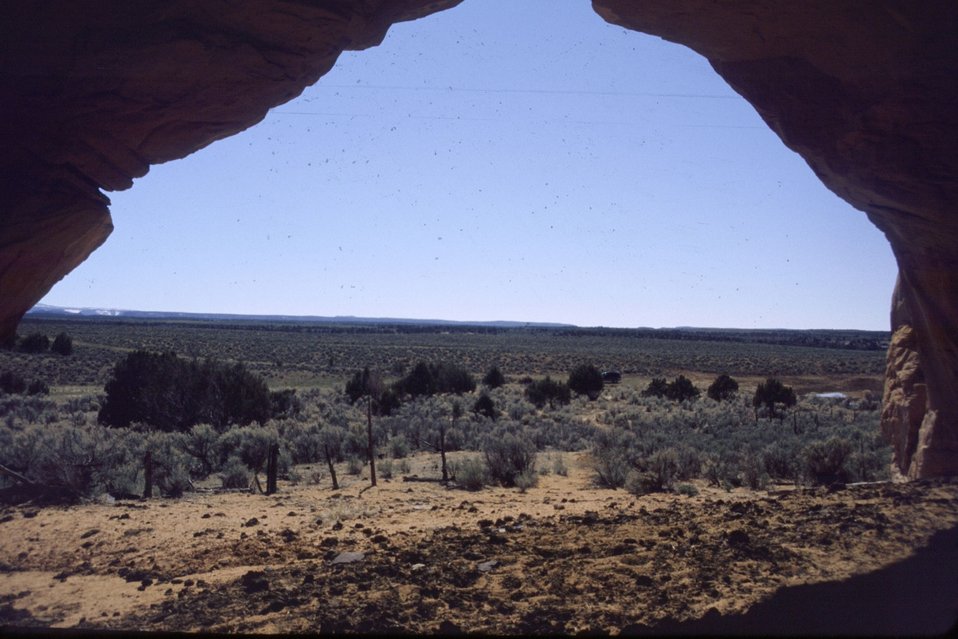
Alcove on South Boundary